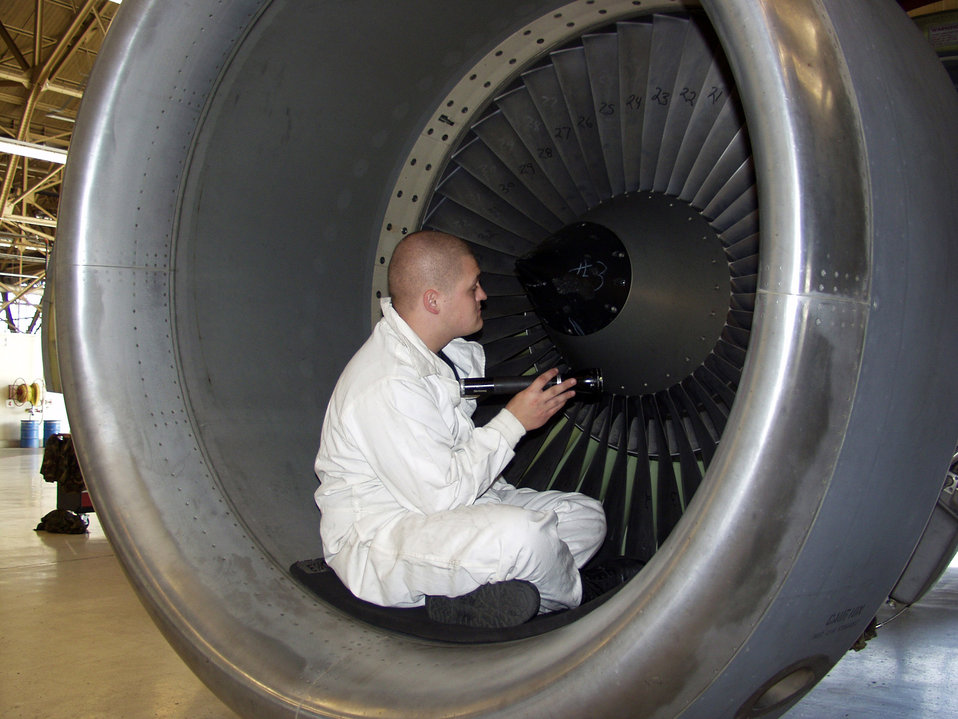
Keeping the mission going at home, away

FAIRCHILD AIR FORCE BASE, Wash. -- Senior Airman Jesse Rogers inspects an engine in a hangar here. Airman Rogers, along with more than 300 Airmen from Grand Forks Air Force Base, N.D., have deployed here while their runway is under construction. Airman Rogers is assigned to the 319th Maintenance Squadron.